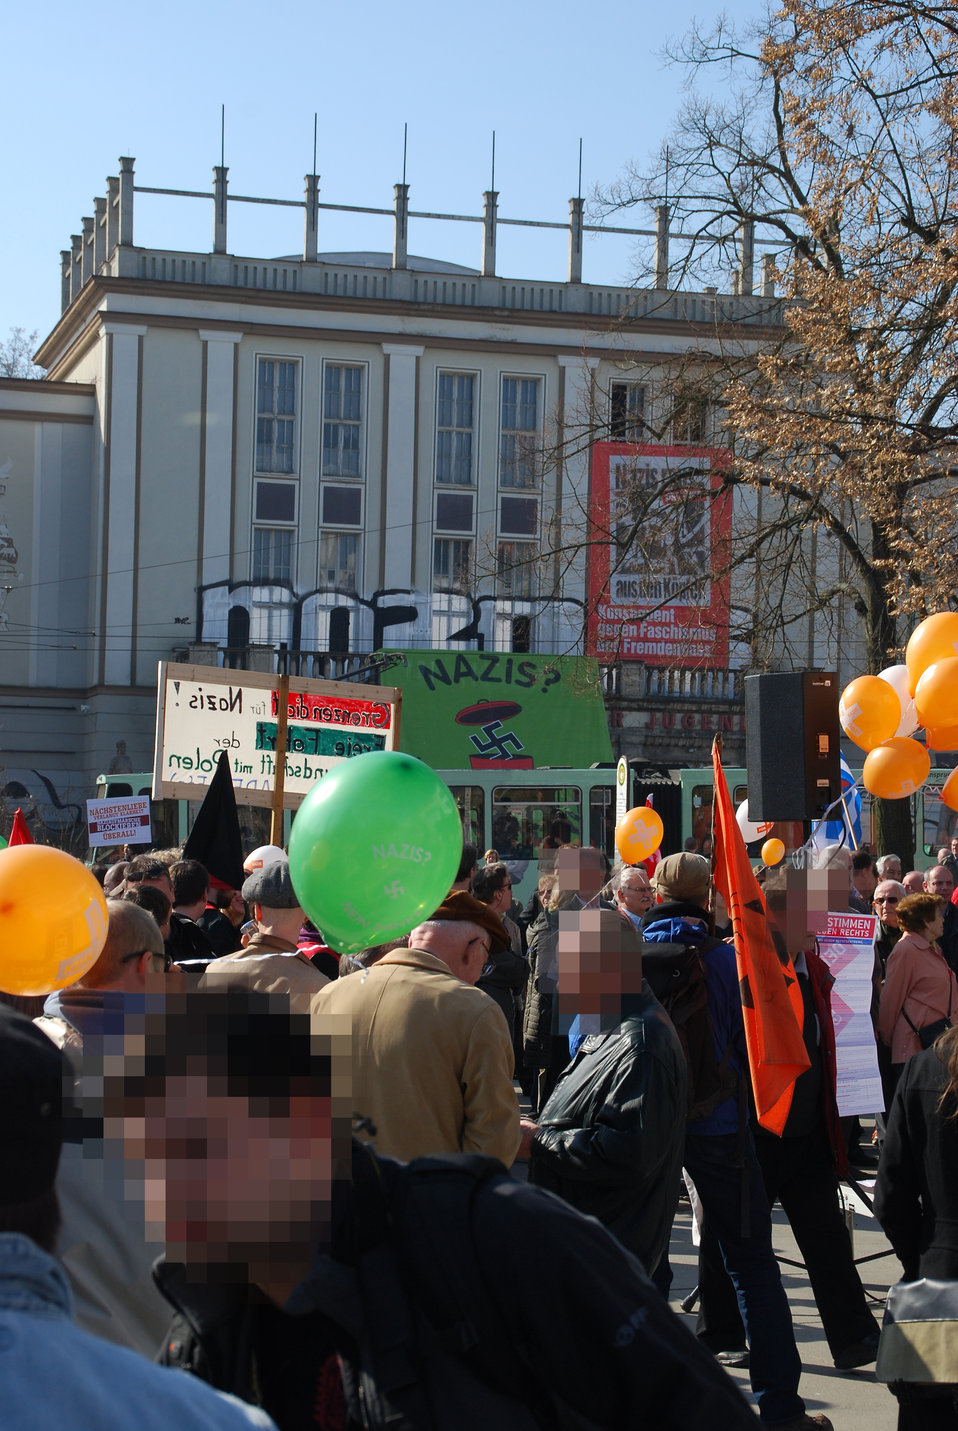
Proteste gegen den Nazi-Aufmarsch am 24.3.2012 in Frankfurt (Oder)